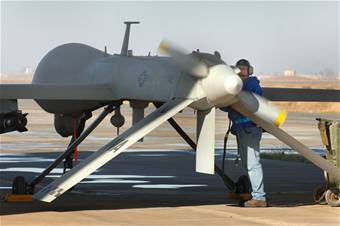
Predator UAV

Bruce Ottenwess conducts pre-flight checks before launching the MQ-1 Predator Unmanned Aerial Vehicle recently from Balad Air Base, Iraq. Mr. Ottenwess is a General Atomics Aeronautical Systems Airframe and power plant mechanic based out of Creech Air Force Base, Nev.